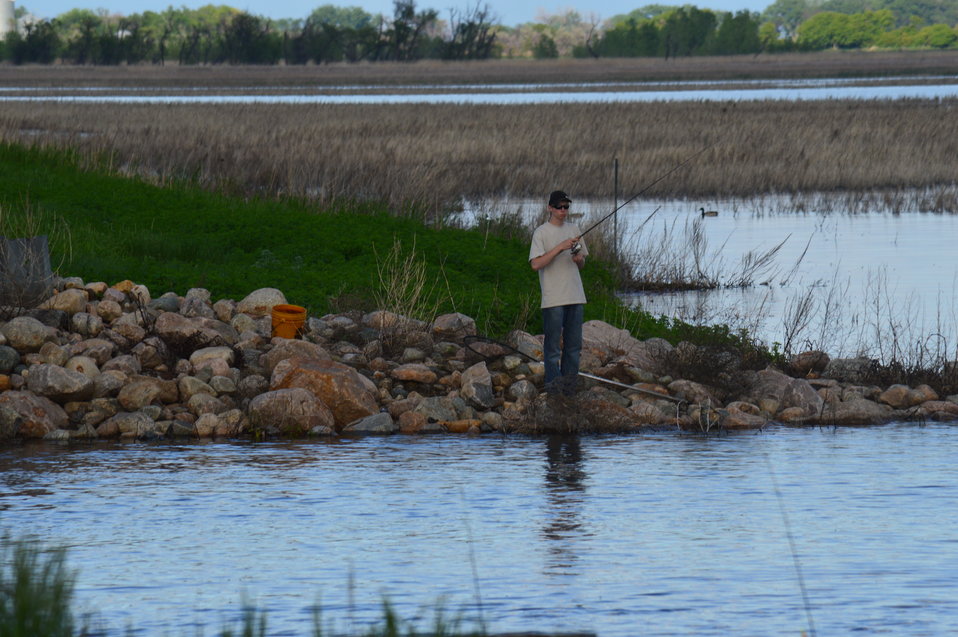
Fishing

Scenery and wildlife at Sand Lake National Wildlife Refuge in South Dakota